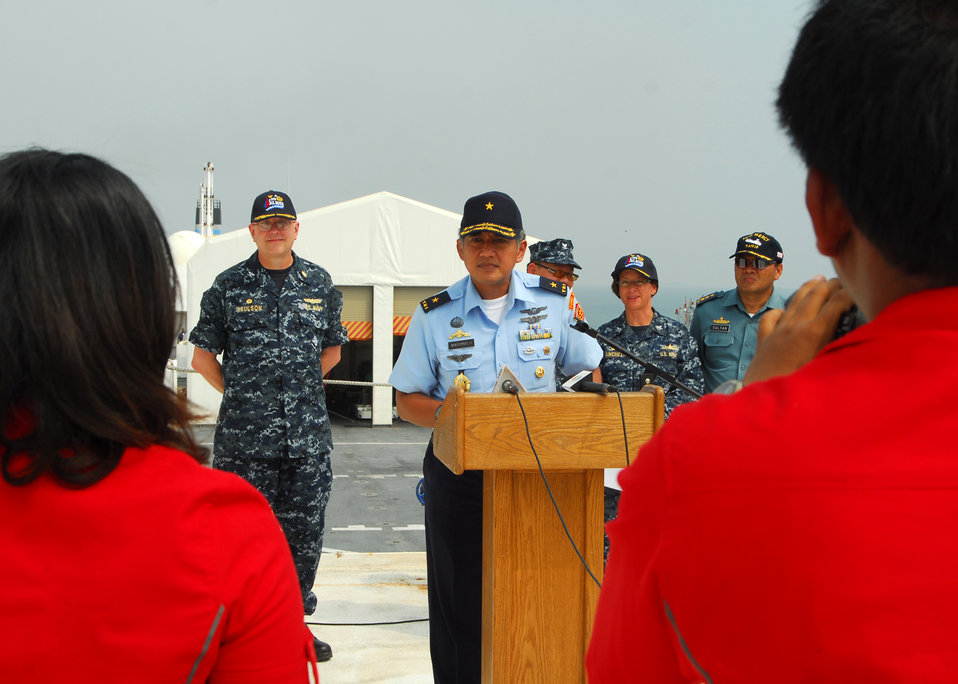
Tentara National Indonesia Surgeon General Marsekal Muda Mariano Delivers Remarks During a Media Availability Tour

Tentara National Indonesia Surgeon General Marsekal Muda Mariano gives remarks during a media availability tour aboard the Military Sealift Command hospital ship USNS Mercy (T-AH 19) during Pacific Partnership 2010 on July 7, 2010. Mercy is en route to its first stop in Indonesia during the fifth in a series of annual U.S. Pacific Fleet humanitarian and civic assistance endeavors to strengthen regional partnerships.